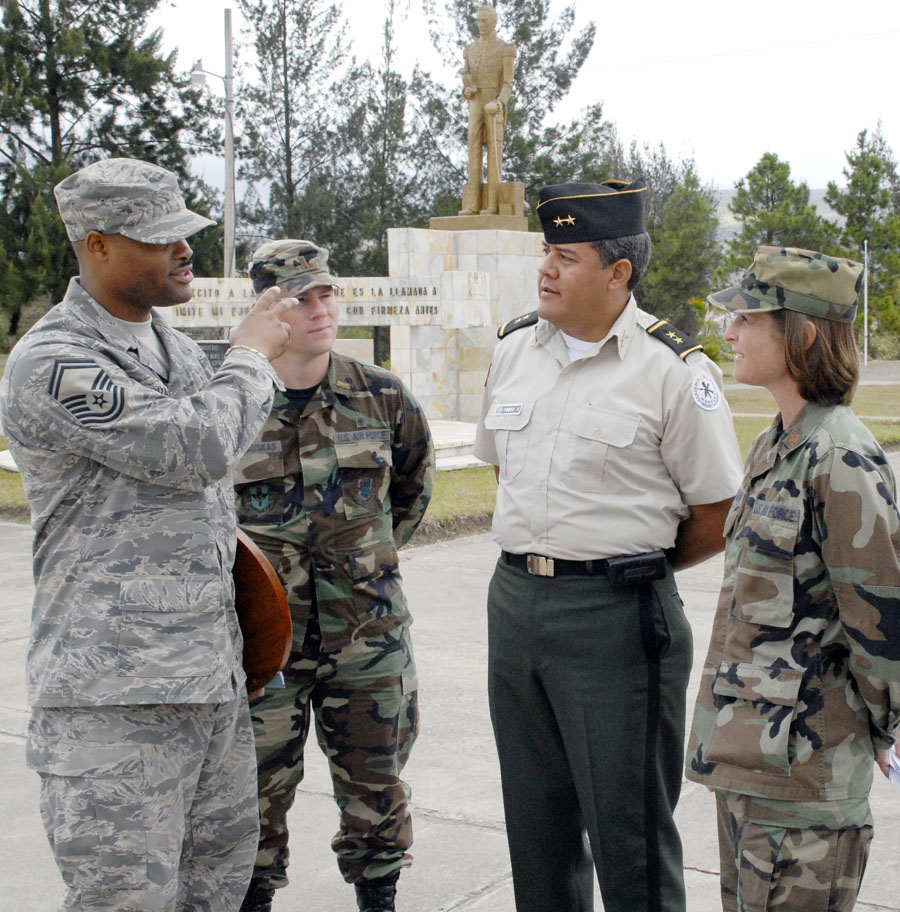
American servicemembers visit Honduran military academy

Senior Master Sgt. Les Bramlett, 2nd Lt. Zack Kalinauskis and Maj. Tiffany Morgan visit with Honduran Lt. Col. Raynel Funes during an information exchange and tour of the Honduran military training academy in Tegucigalpa, Honduras. Sergeant Bramlet, Lieutenant Kalinauskis and Major Morgan are members of Joint Task Force-Bravo from Soto Cano Air Base, Honduras. Colonel Fuenes is the Honduran Military Training Academy deputy director.